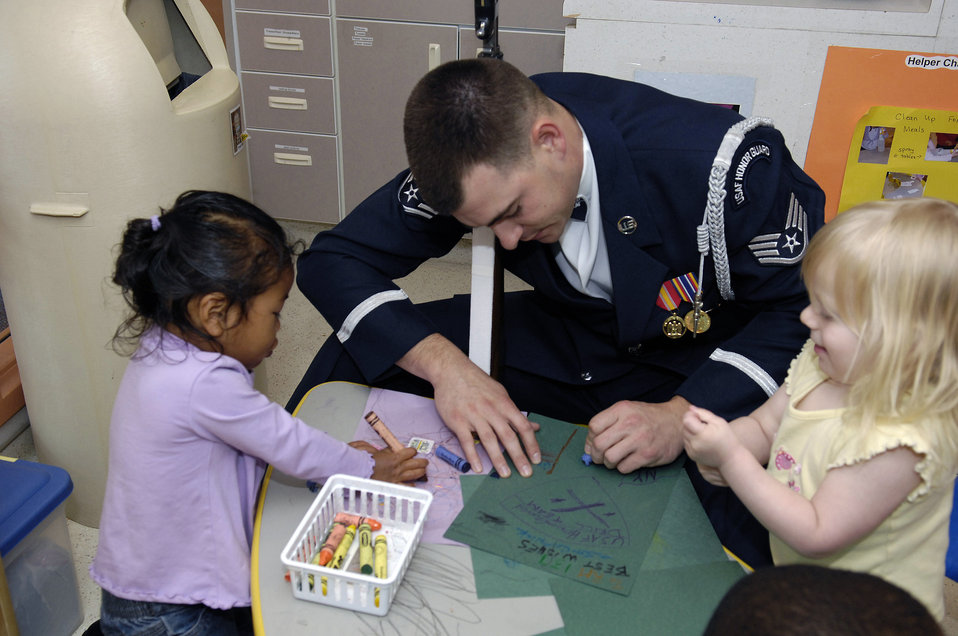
Drill team provides northern exposure for Air Force

Staff Sgt. Adam Clonick colors with local children May 12 at the Ellsworth Child Development Center at Ellsworth Air Force Base, S.D. The Air Force Honor Guard Drill Team is the traveling component of the AF Honor Guard and tours world-wide representing all Airmen and showcasing Air Force precision to recruit, retain and inspire for the Air Force mission. Sergeant Clonick is the current mission coordinator.